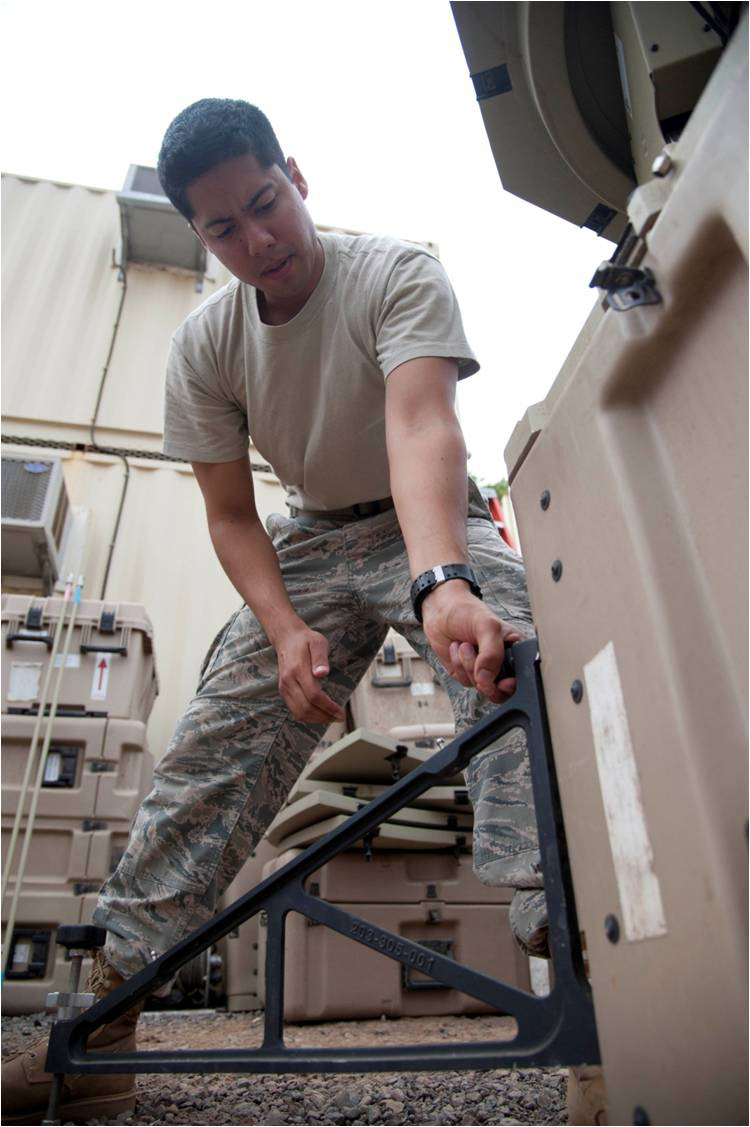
CJTF Horn of Africa

Tactical Networking technician Senior Airman Christopher Wood, assigned to Combined Joint Task Force –Horn of Africa’s communications directorate, assembles part of an access point satellite terminal here April 19, 2012. These terminals, operated by the TACNET section, gives U.S. troops forward deployed in the Horn of Africa the ability to exchange messages through a secure medium in support CJTF-HOA missions.